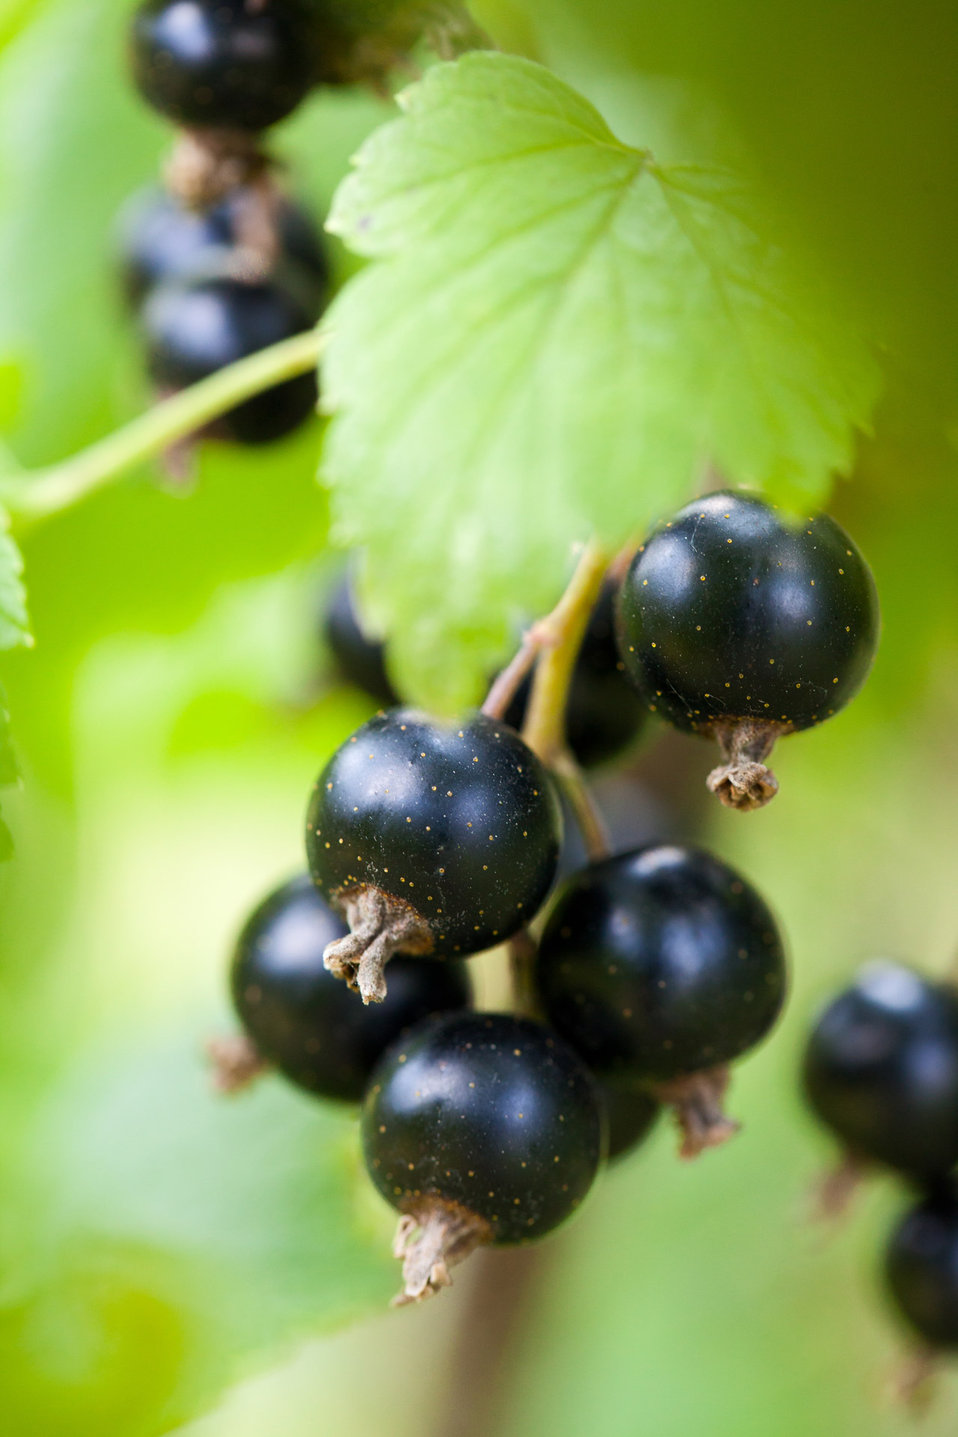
Blackcurrant

Ripening blackcurrant.